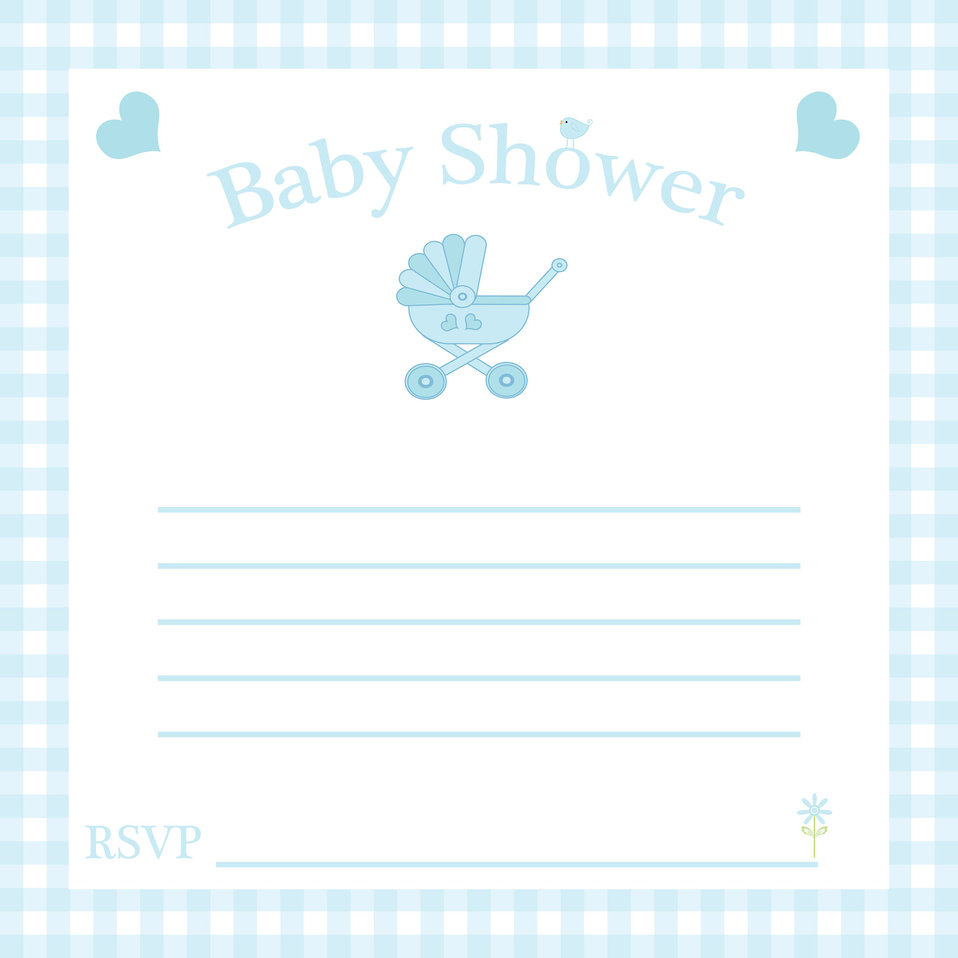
Baby shower invitation

Blue baby boy shower invitation template.